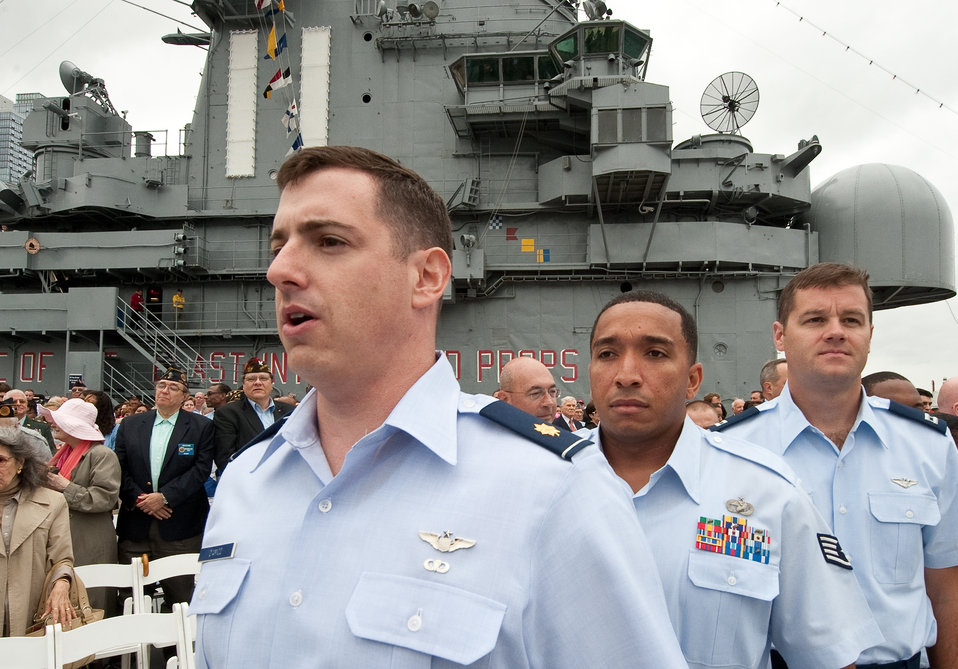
Air Force Week New York City Proclamation Ceremony

During the Air Force Week New York City proclamation ceremony at the USS Intrepid on Aug. 24, 2010. The event at the Intrepid Sea, Air & Space Museum was highlighted by a six-ship flyover by the USAF Thunderbirds. The Honorable Michael Donley, Secretary of the Air Force attended, along with General Raymond Johns, Commander of Air Mobility Command. The Police Commissioner of the City of New York, the Honorable Raymond Kelly, represented NYC. Mr. Greg Kelly of